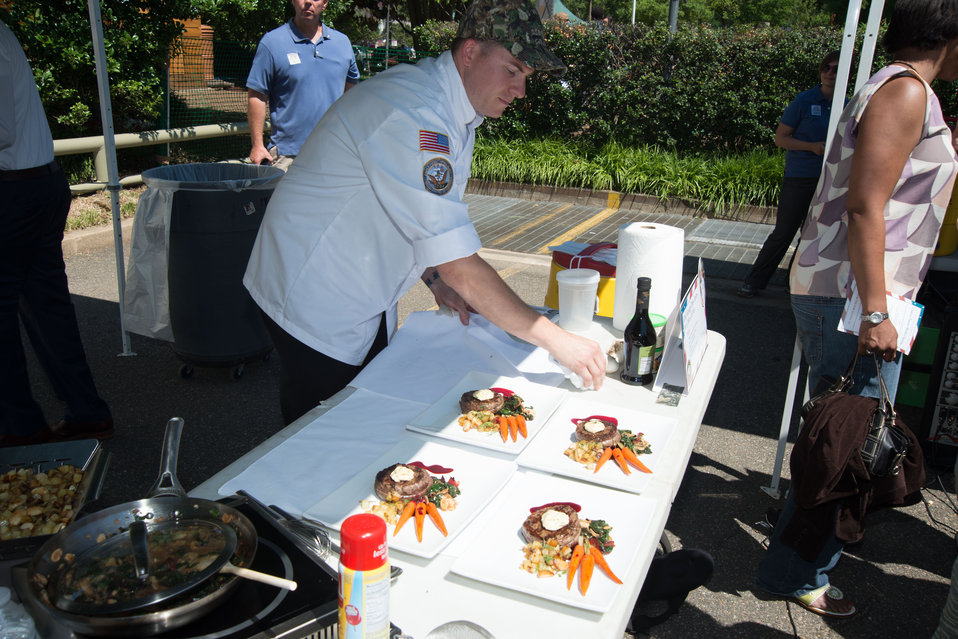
U.S. Navy Culinary Specialist First class (CS1) George Arters prepares a meal at the Military Chefs barbeque battle held at the opening of the U.S. Department of Agriculture’s (USDA) Famers Market in the east parking lot at USDA on Friday, Jun. 6, 2014.